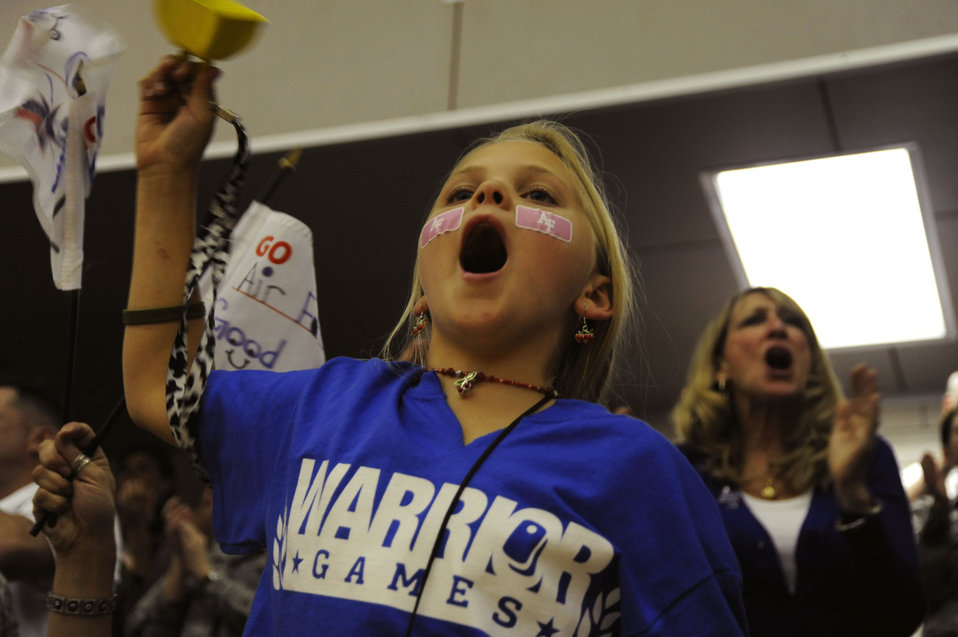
Warrior Games 2012

Nina Gestring cheers for her father May 1, 2012, during the Warrior Games at the U.S. Air Force Academy in Colorado Springs, Colo. Nina's father, Ken Gestring, is a member of the Air Force sitting volleyball team. The Air Force beat their opponent in consecutive matches.